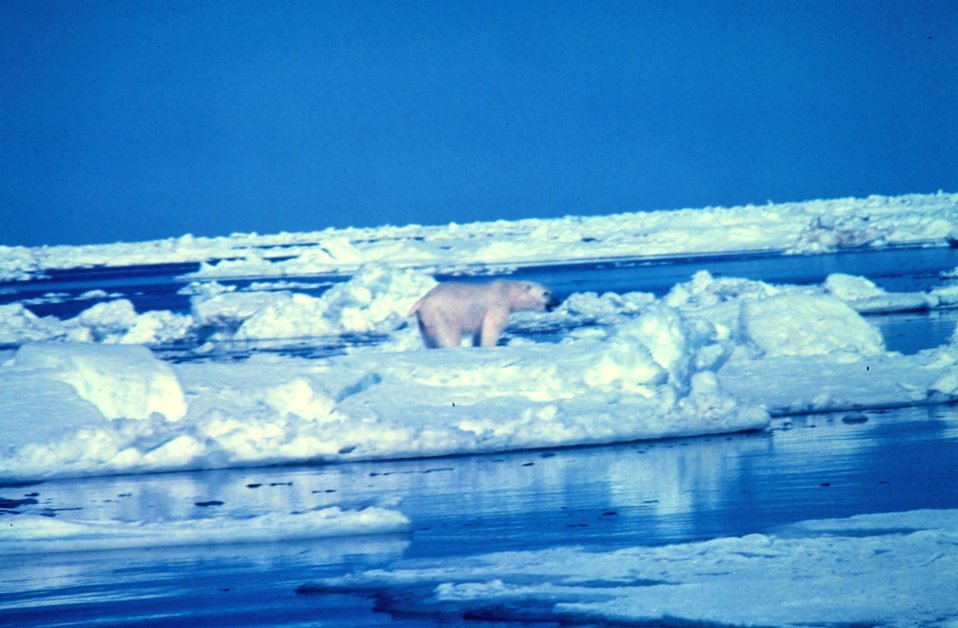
Polar bear - Ursus maritimus - on the Beaufort Sea ice in the summer.